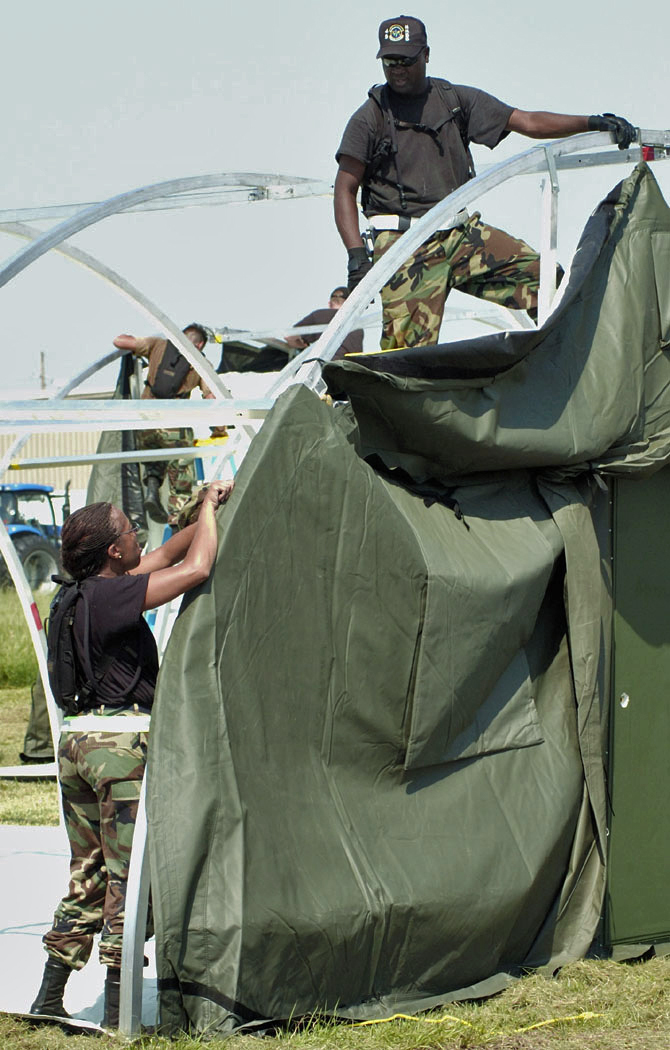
Tent city

NEW ORLEANS -- Tech. Sgt. Lenore Cobb (left) and Master Sgt. Tony Wells erect a tent at Louis Armstrong International Airport here Sept. 4. The tents were flown in from the 49th Materiel Maintenance Group at Holloman Air Force Base, N.M., to house workers supporting the Hurricane Katrina relief effort.